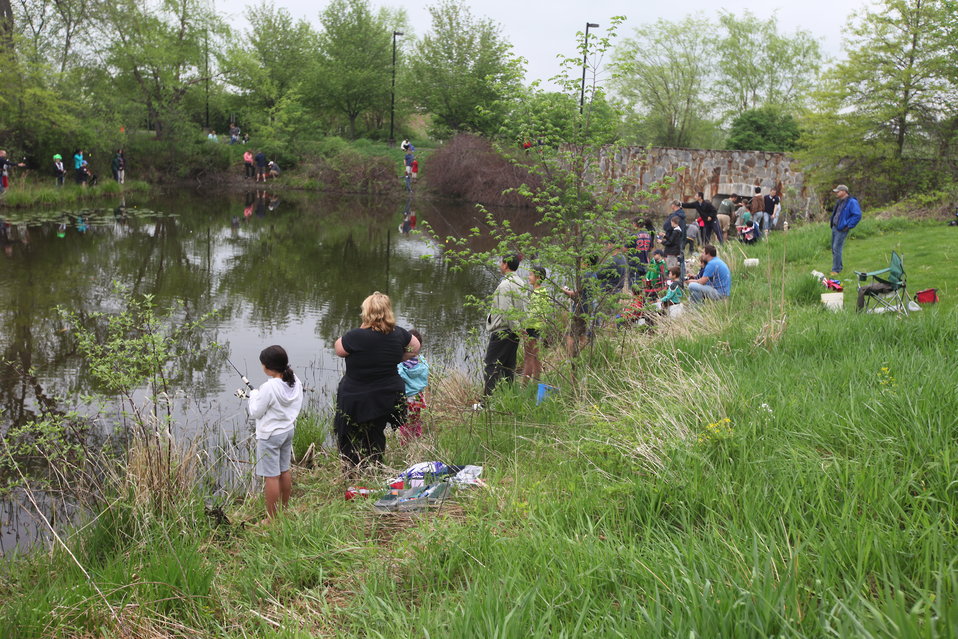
Fishing Derby